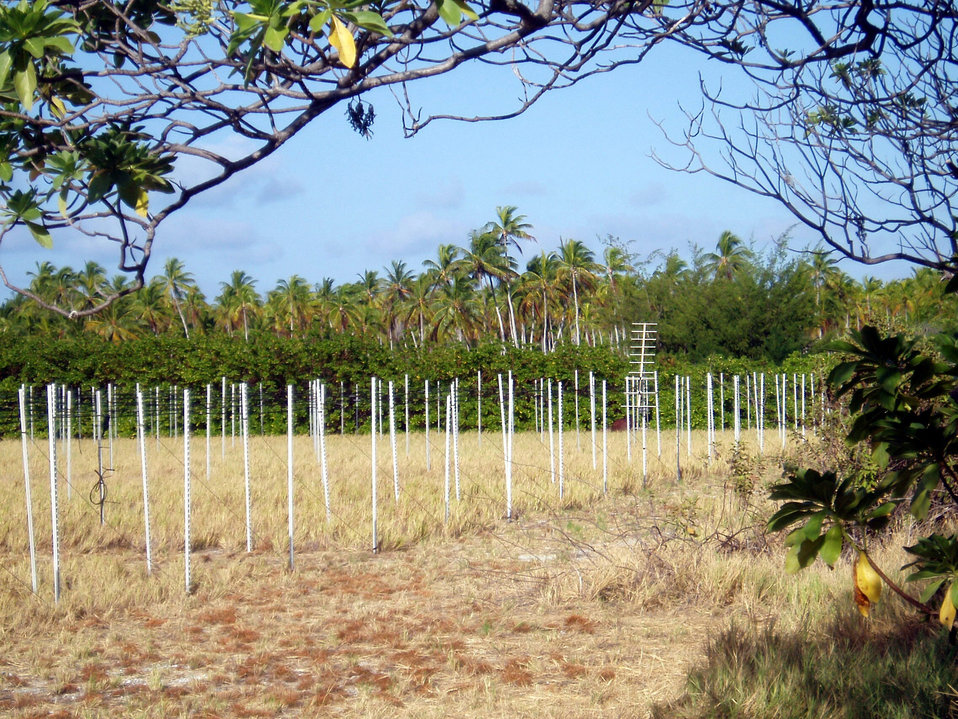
Ionospheric forecasts improve warfighter communication efficiency

The Scintillation Network Decision Aid antenna, located on Kiritimati Island (Christmas Island), Republic of Kiribati, monitors geostationary satellite communication signals to determine the effects of ionospheric turbulence.